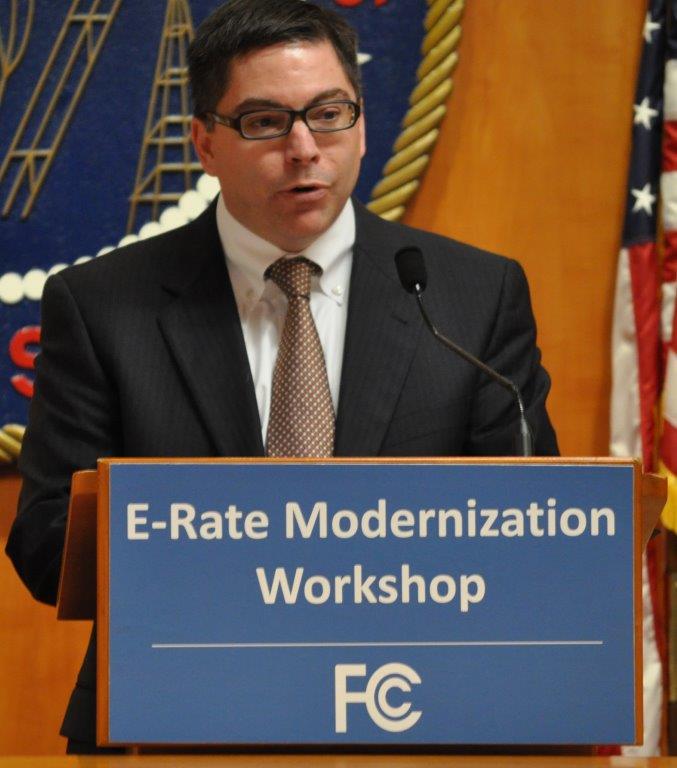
5.6.2014 E-Rate Modernization Workshop

Commissioner O'Rielly speaking at the E-Rate Modernization Workshop, 5/6/14